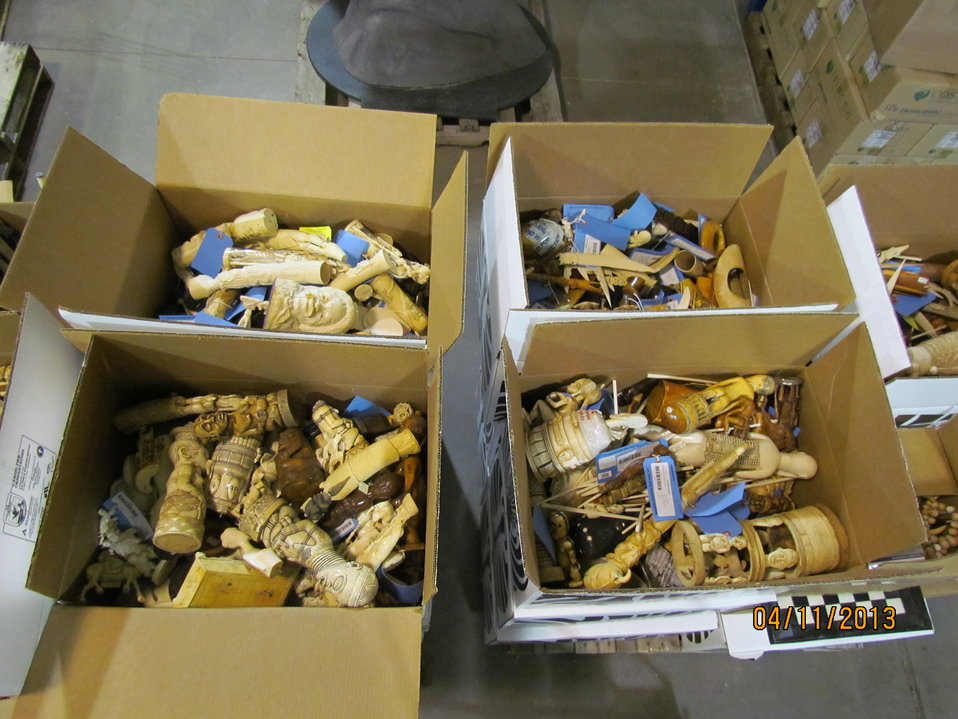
Boxes of small ivory pieces